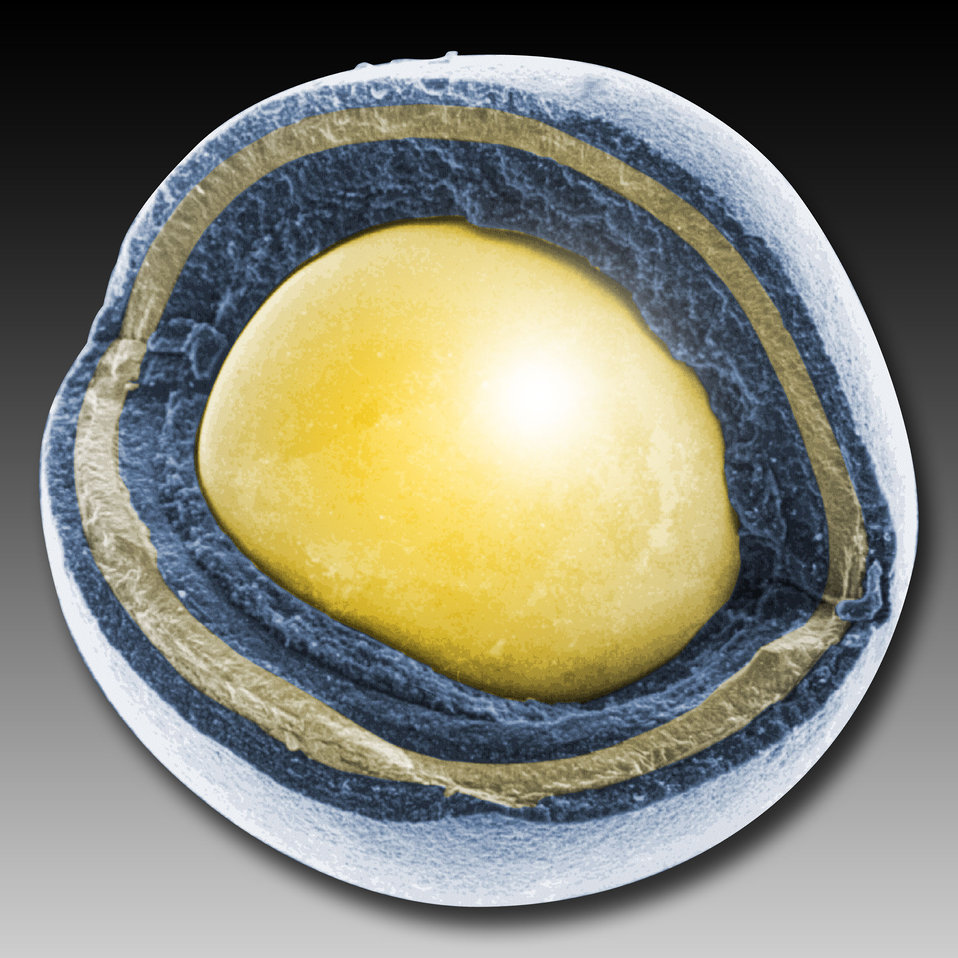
AT IDAHO NATIONAL LABORATORY, NEXT-GENERATION TRISTRUCTURAL-ISOTROPIC (TRISO) FUEL PARTICLES HAVE SEVERAL LAYERS OF CARBON AND CARBIDE THAT SERVE AS THE PRIMARY CONTAINMENT FOR RADIOACTIVE MATERIAL.

TRISO fuel particles are the size of poppy seeds. Break one open and it looks like tiny jaw-breakers. An outer shell of carbon coats a layer of silicon carbide, which coats another layer of carbon and the uranium center- where the energy-releasing fission happens. By-products of the fission process have the potential to escape the fuel, especially at very high temperatures. Even at 1,800, which each boast their own primary containment system.